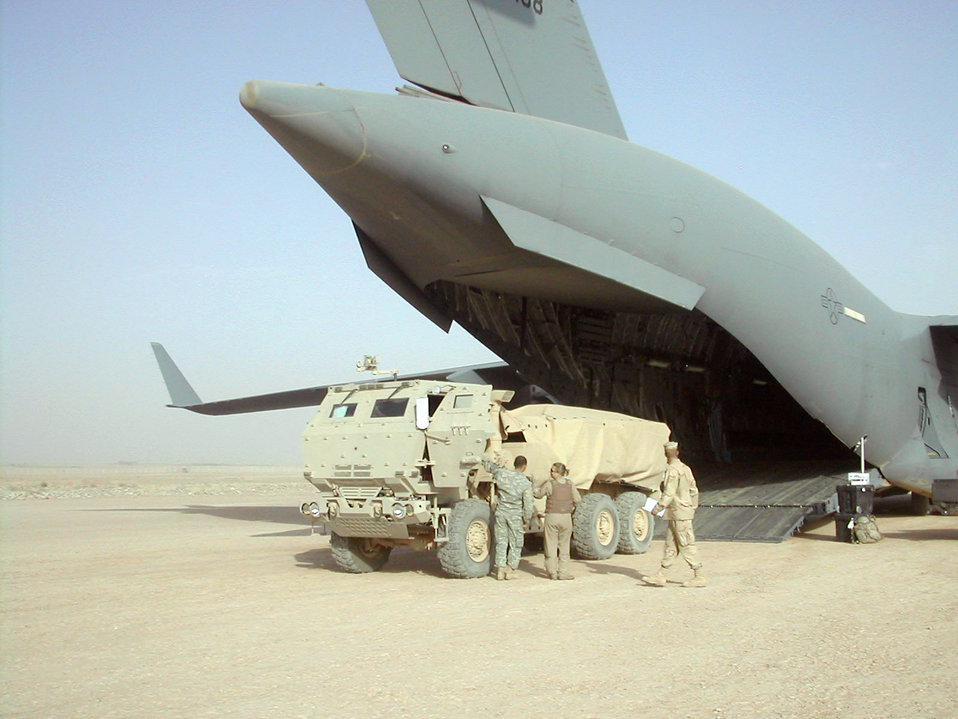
C-17 deployment length, efficiency increase

A High Mobility Artillery Rocket System is offloaded from a C-17 Globemaster III onto a dirt landing strip July 3 in Southwest Asia. The C-17 mission re-supplied coalition international security assistance forces in a remote region of Afghanistan.